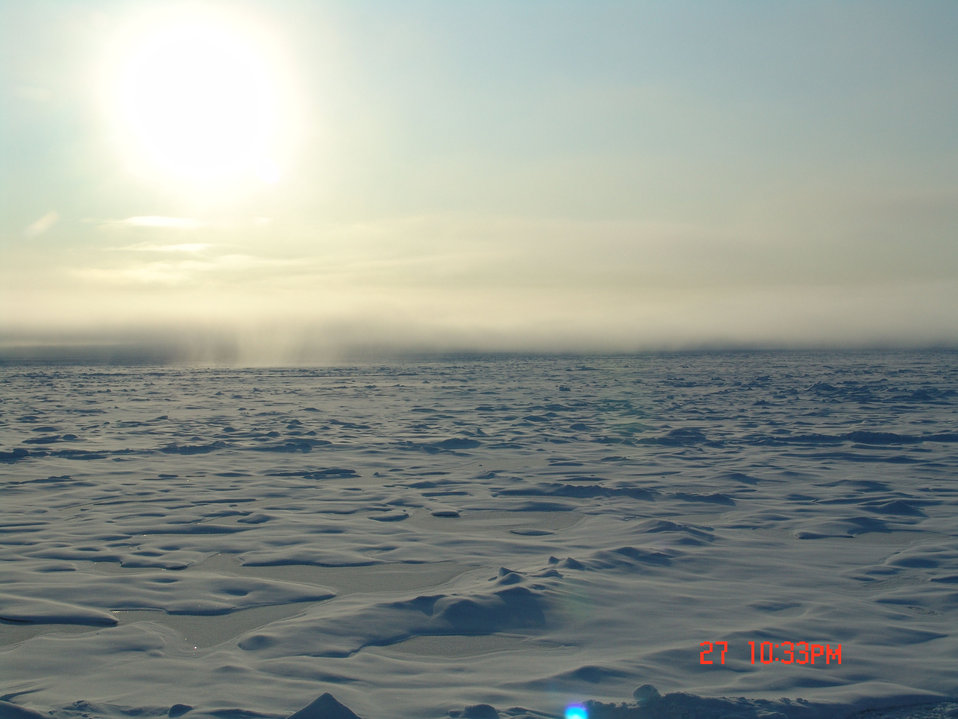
Hummocky multi-year ice with ridges and refrozen melt ponds. Frozen fog in the distance with either a show shower or possible illumination of ice crystals below sun.